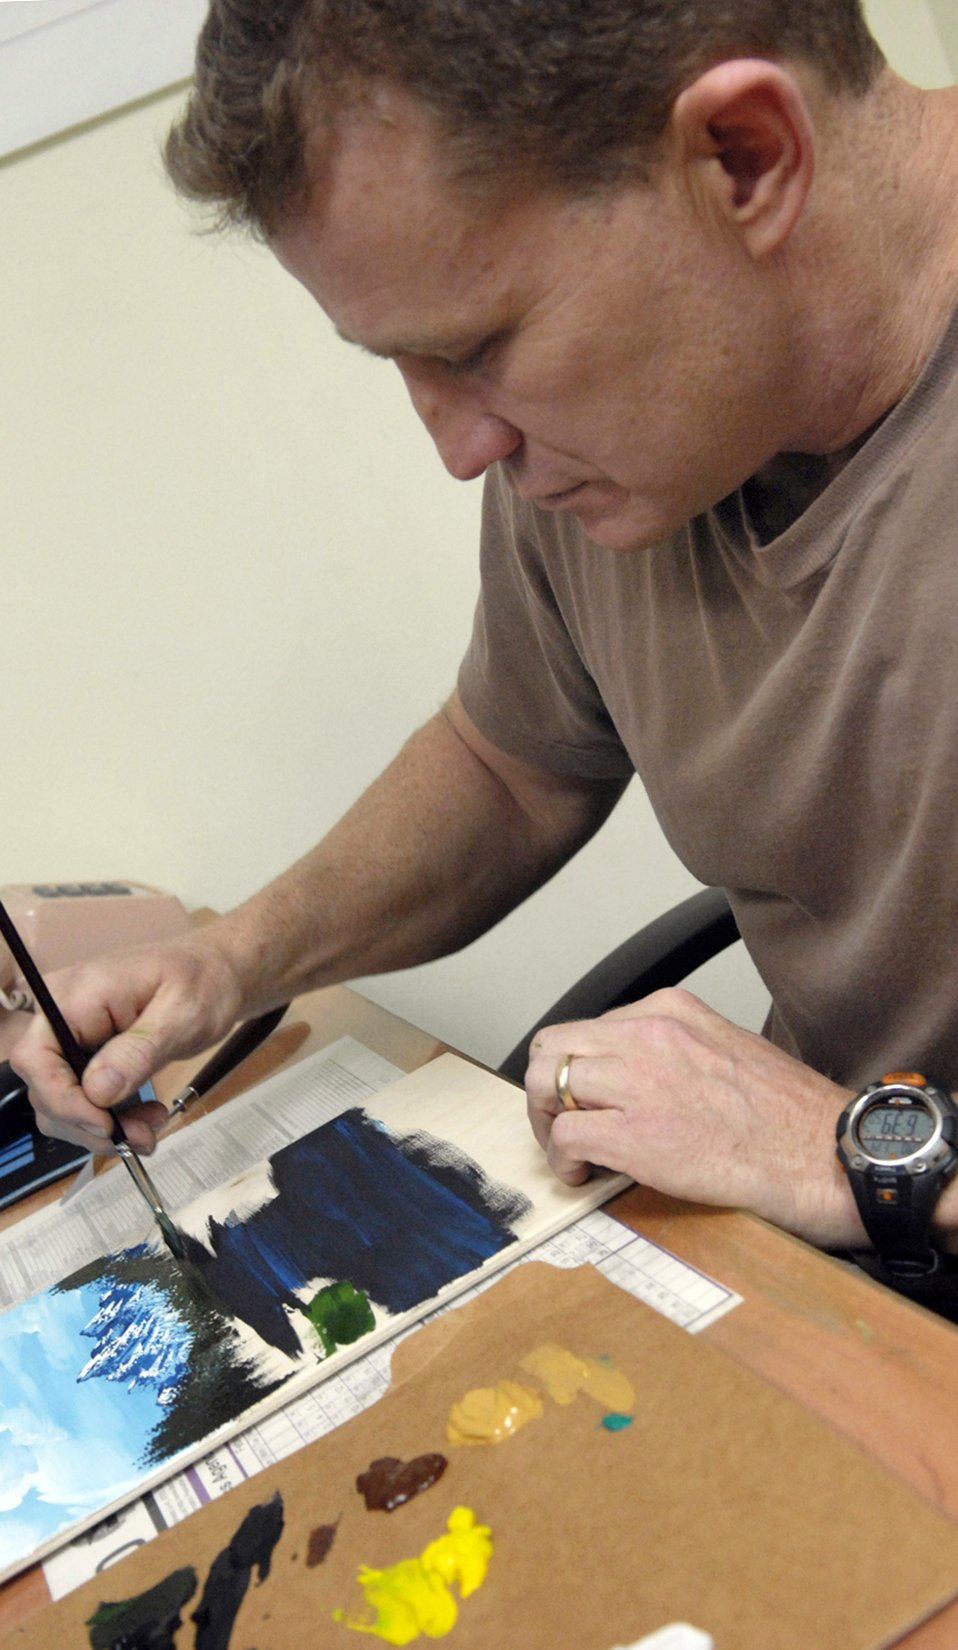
Manas NCO donates art to fund surgeries for needy children

Tech. Sgt. Robert Sommers adds detail to a painting he is working on Jan. 14 at the 76th Expeditionary Civil Engineer Squadro at Manas Air Base, Kyrgyzstan, on his off-duty time. Sergeant Sommers sells the paintings he creates from leftover wood scraps and donates the proceeds to a local heart foundation that helps pay for heart surgeries for children whose parents are unable to pay for the surgeries themselves. Sergeant Sommers is the 376th ECES operations management NCO in charge.